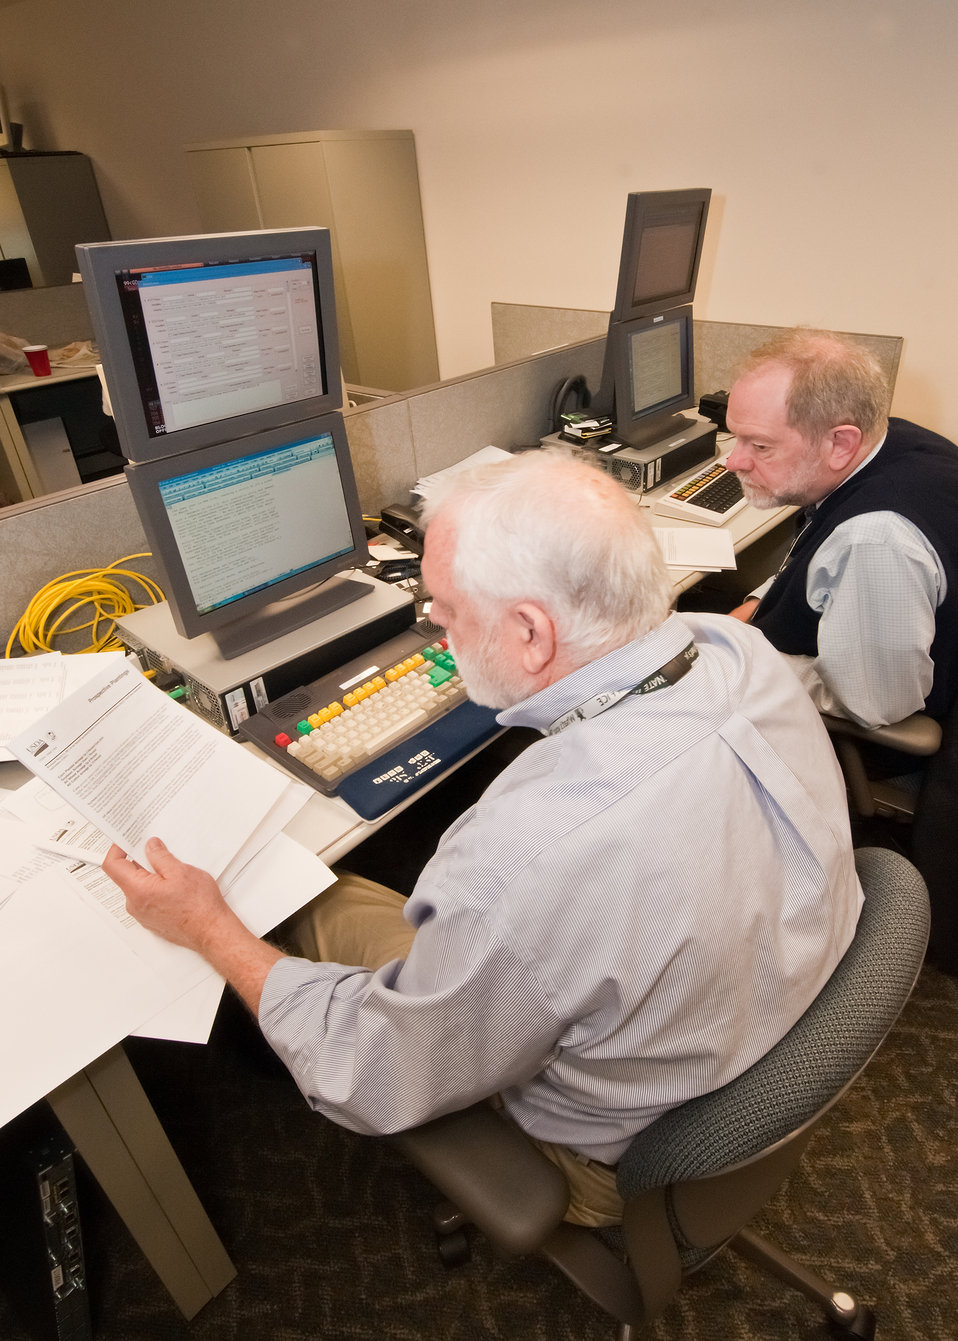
Daniel Enoch (left) and Steve Geiman (right) of Bloomberg News review the United States Department of Agriculture, National Agricultural Statistics Service March Agricultural Survey before the information is released in Washington, DC, Thursday, March 31, 2011. The NASS lockup is agricultural commodity information held until the Secretary of Agricultural or Secretary’s Designee has signed and released the information. The signing is the official act of recognizing the information as an official USDA document.